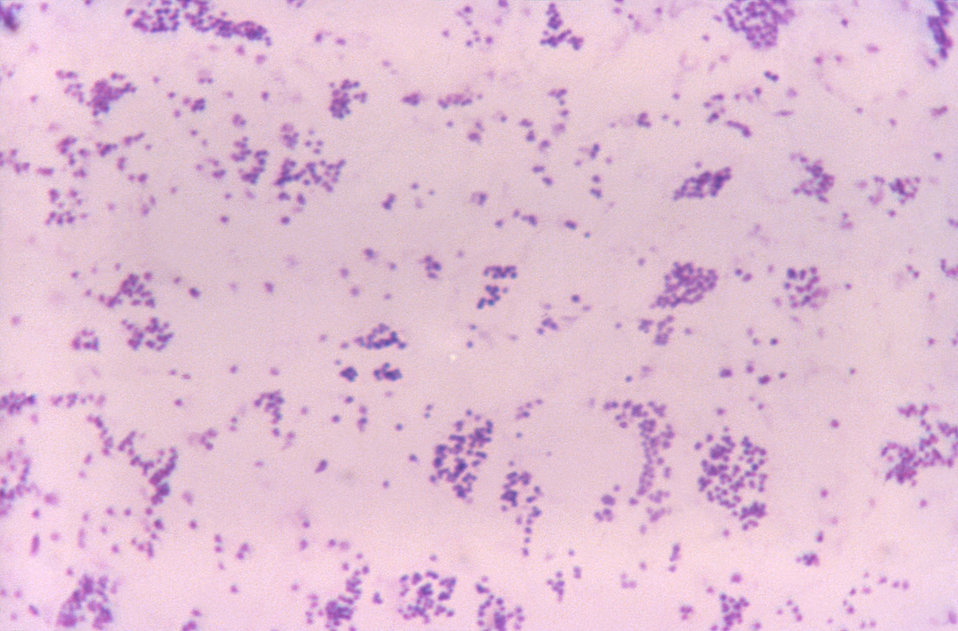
Using methylene blue stain, this photomicrograph revealed the presence of Francisella tularensis bacteria, formerly known as Pasteurella tularensis. F. tularensis is the pathogen responsible for causing the disease tularemia.What is Tularemia?